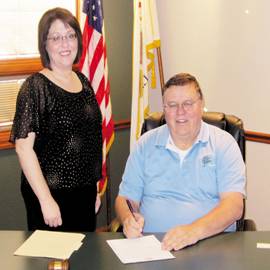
Breese Mayor Charles Hilmes signs the National Drug Facts Week proclamation. Joining Mayor Hilmes is Jennifer Knopp, Prevention Specialist for Hoyleton Youth and Family Services.